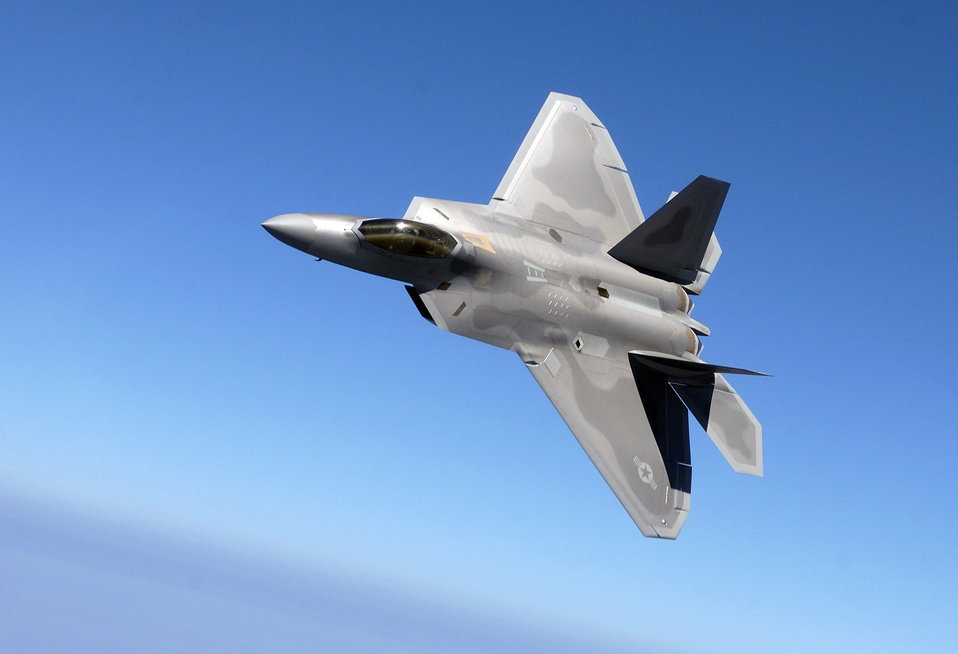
Raptor presence

LANGLEY AIR FORCE BASE, Va. -- Lt. Col. James Hecker banks his F/A-22 Raptor during a training sortie here. He is the 27th Fighter Squadron commander.